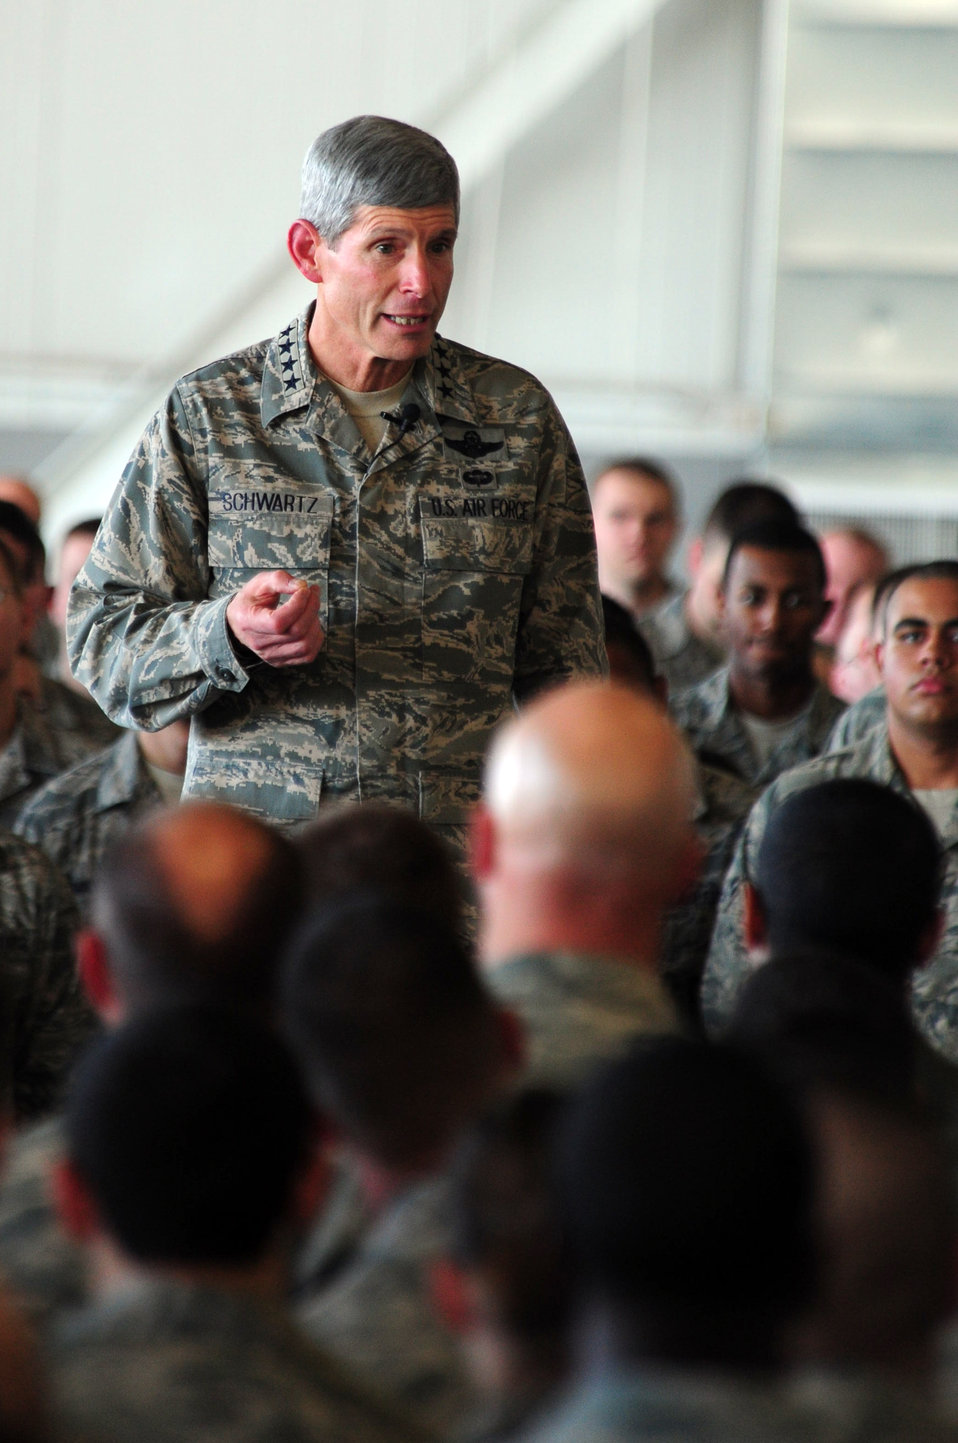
CSAF visits Minot AFB

Air Force Chief of Staff Gen. Norton Schwartz speaks to Airmen Oct. 4, 2011, at Minot Air Force Base, N.D., during an all-call. Schwartz expressed gratitude for their efforts in aiding the Minot community, as well as each other, during the flooding this past summer.